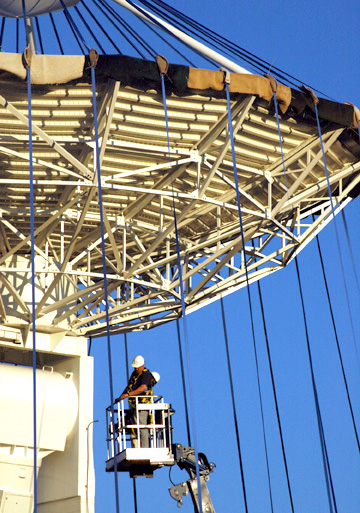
Lining up

SCHRIEVER AIR FORCE BASE, Colo. (AFPN) -- Contractors secure lines that will stabilize the antenna cover of an Air Force Satellite Control Network ground antenna. The cover protects the antenna from bad weather.